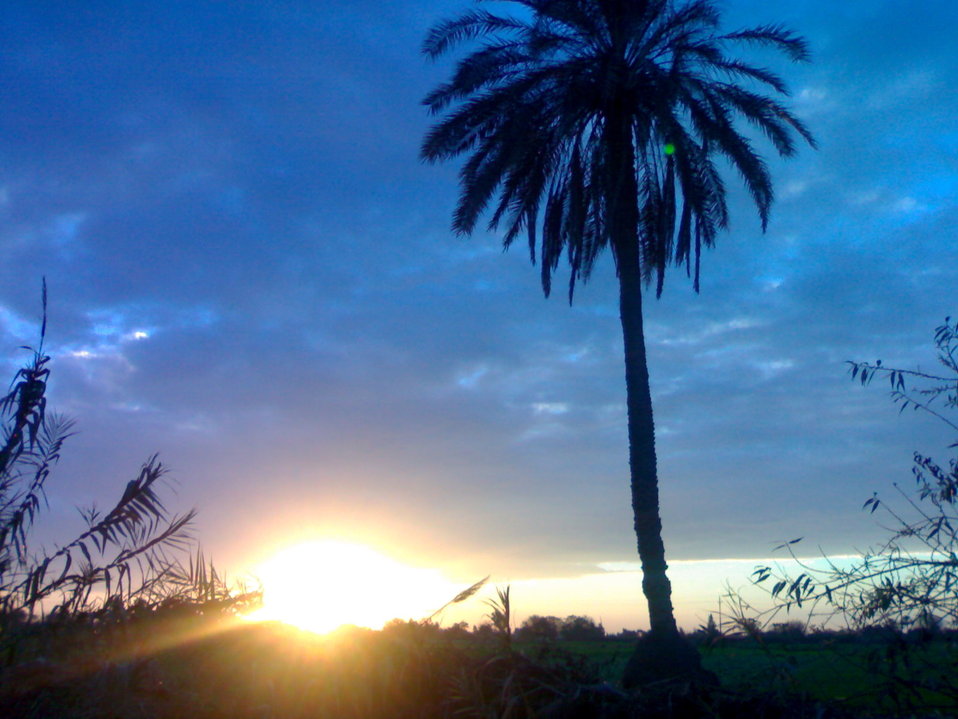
Iam the photographer of this image in one of Egyptian towns near Damanhur, Egypt. Its about sunset.